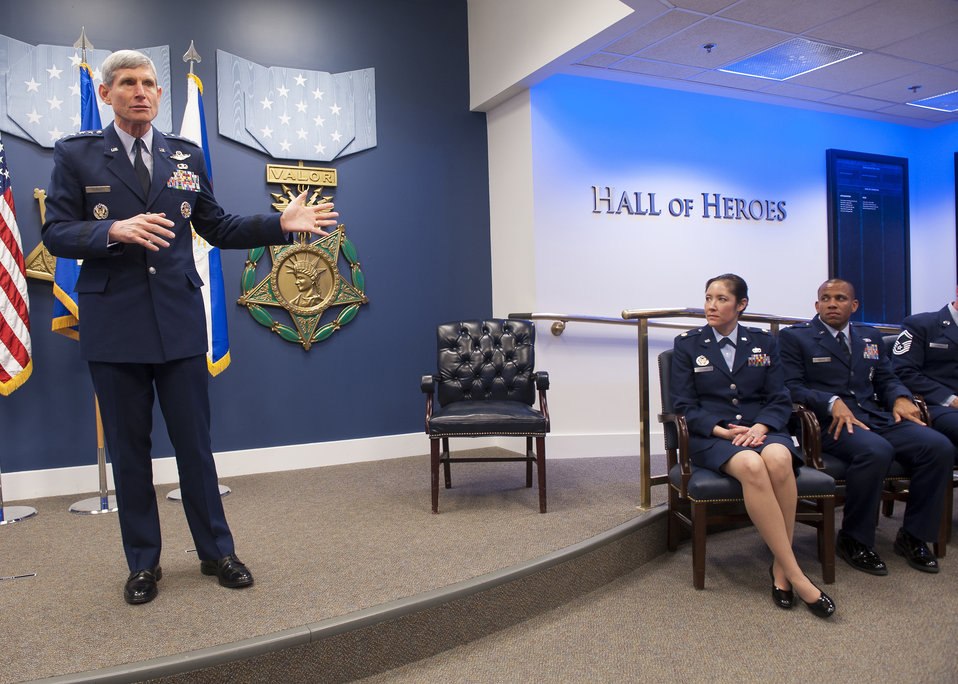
2011 Sijan awards

Air Force Chief of Staff Gen. Norton Schwartz (left) gives his remarks before presenting the Lance P. Sijan USAF Leadership Award to the 2011 recipients during a ceremony in the Pentagon's Hall of Heroes on April 6, 2012, Washington, D.C. Maj. Laura DeJong and Capt Gilbert Wyche II (pictured, left to right) joined Senior Master Sgt. Timothy Sterner and Tech. Sgt. Nathanael Hoag as the newest honorees. The Sijan Award was
created in 1981 to recognize individuals who demonstrate the highest qualities of leadership both in and out of uniform. Sijan, was an Air Force Academy graduate. At the time of his death he was an Air Force Captain and fighter pilot. He was shot down during a mission in Vietnam and later died while being held in a prisoner of war camp. He was awarded the Congressional Medal of Honor posthumously.